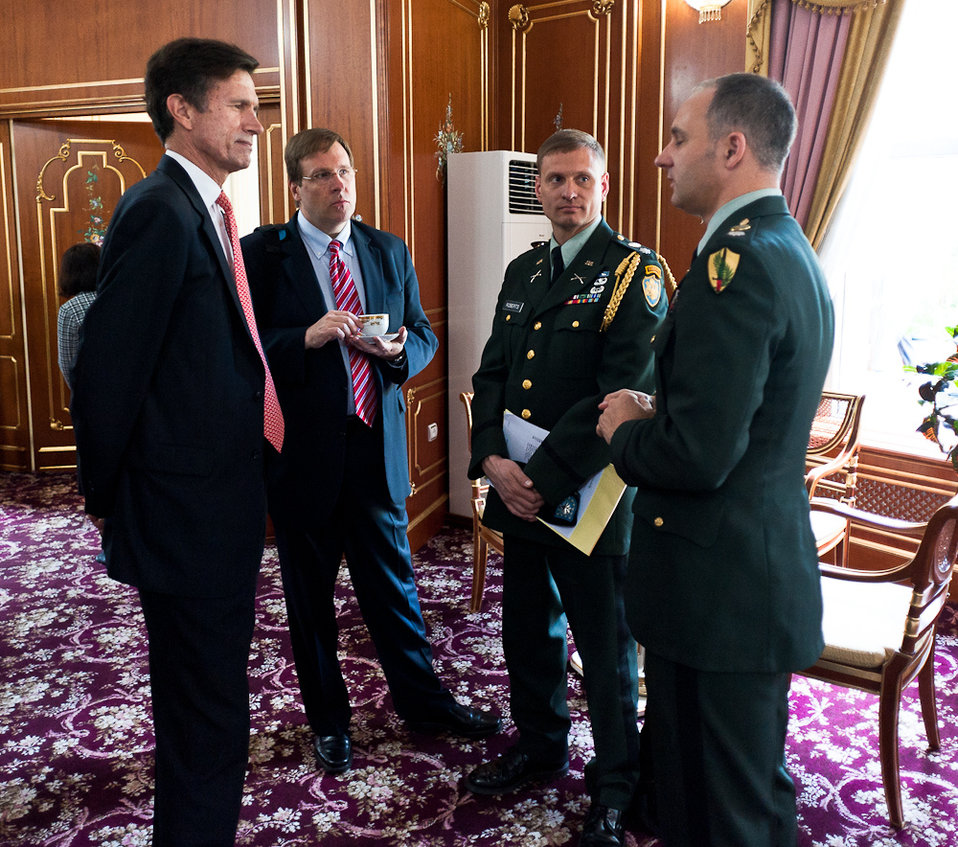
Assistant Secretary Blake Leads U.S. Government-Interagency Delegation to U.S.-Tajikistan Annual BIlateral Consultations

U.S. Assistant Secretary of State for South and Central Asian Affairs, Robert O. Blake, Jr. leads the U.S. government-interagency delegation to the second U.S. - Tajikistan Annual Bilateral Consultations in Dushanbe, Tajikistan, April 11 - 12, 2011. [Damian Wampler/ State Department photo/ Public Domain]